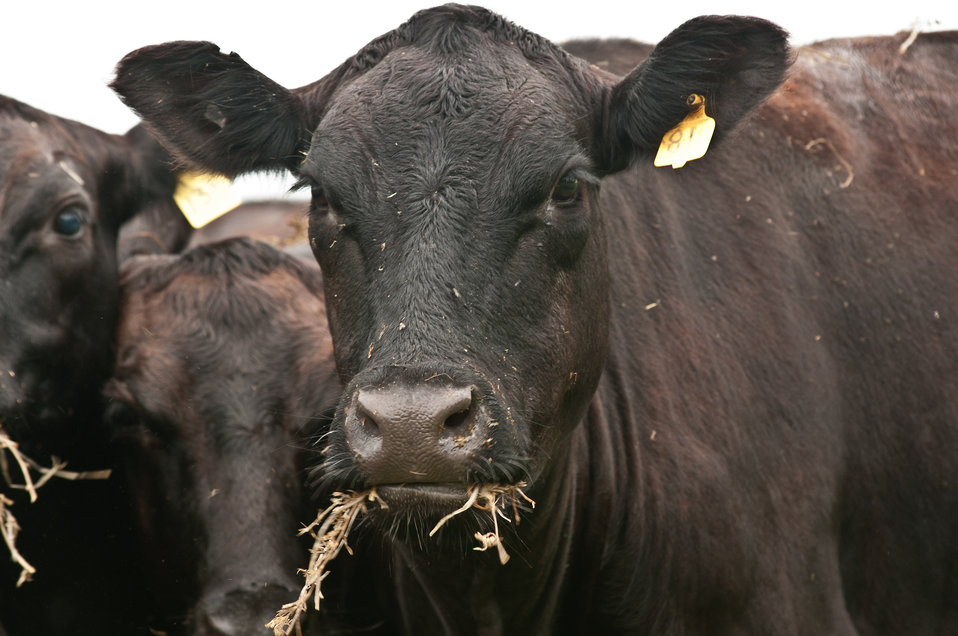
Black Angus cows and calves graze organic pastures, and for added nutrition and variety, they enjoy a daily feeding of sweet silage at Nick’s Organic Farm, owned by Nick Maravell, in Adamstown, MD on Friday, July 12, 2013. The white plastic wrapped bales of pasture grass and alfalfa have been fermenting for months to create sweet silage that stores well and can be used to feed cattle at varying amount all year long. The fermentation process sweetens the taste and increases the vitamin levels. The farm produces Black Angus beef, chicken, turkey, eggs, hay, soybeans, corn, alfalfa, orchard grass, rye; and other crops. The cattle are 100% grass-fed receiving certified organic pasture, certified organic hay (in winter), water and mineral salts mixed with sea kelp. The cattle are not fed hormones, antibiotics or animal products. Poultry feed from grain is ground from organic grain. The poultry also graze on organic pastures. The farm has conducted on-farm research with federal, state and non-profit agencies to refine organic practices. An organization such as the U.S. Department of Agriculture (USDA) Agricultural Research Service (ARS) center in Beltsville has been able to conduct research to improve organic crops and to breed and manage the cattle so that they have.